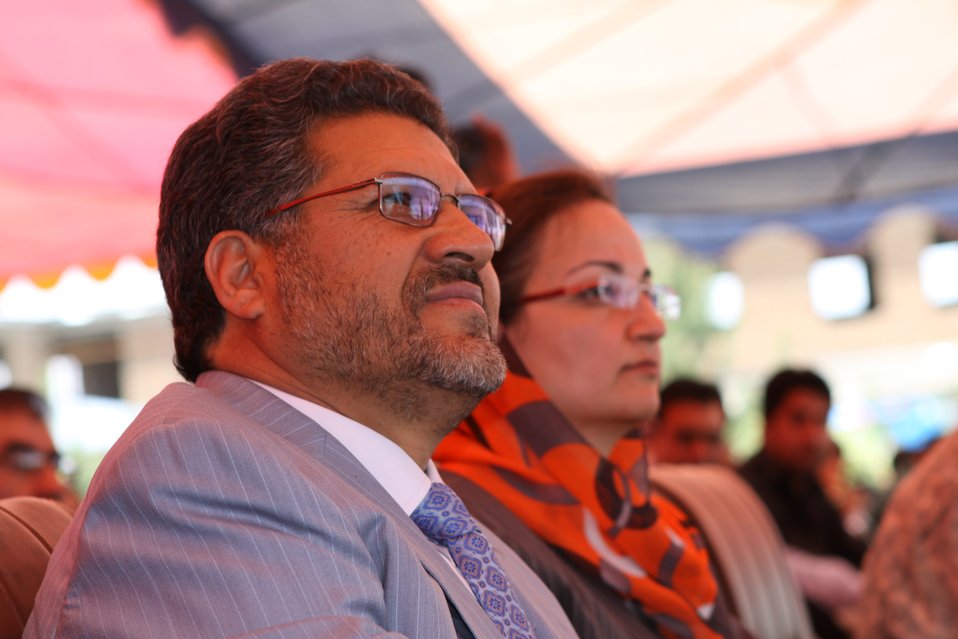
100522 ATVI Graduation 108